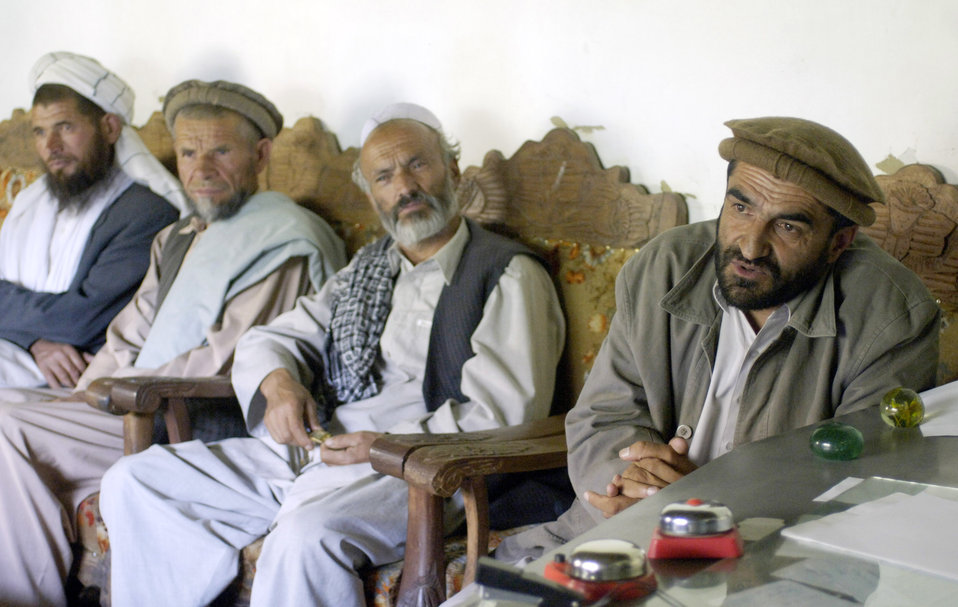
Panjshir PRT

Dara district manager Malam Sorab (right) confers with district officials during a meeting with Panjshir Provincial Reconstruction Team commander Lt. Col. Christopher Luedtke (out of picture) Aug. 5. The meeting was set up to discuss infrastructure development in the district. Colonel Luedtke brought members of his PRT into the Dara district of Panjshir province, Afghanistan, to meet with district officials. Colonel Luedtke is deployed from Hill Air Force Base, Utah.